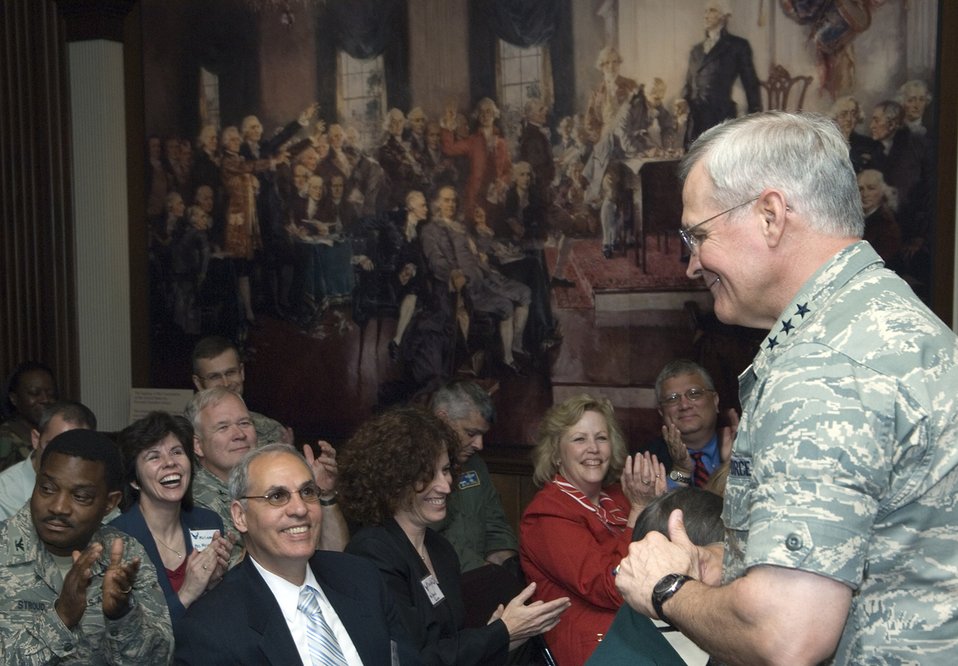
Officials explain humanitarian operations during Air Force Week in Philadelphia

Lt. Gen. Christopher A. Kelly speaks to Airmen and community leaders about hope the Air Force has provided worldwide through humanitarian operations during the Global Presence Seminar held May 29 at the National Liberty Museum in Philadelphia. The seminar held during Air Force Week in Philadelphia highlighted heroism and humanitarian actions by the Air Force worldwide. General Kelly is the vice commander of Air Mobility Command from Scott Air Force Base, Ill.